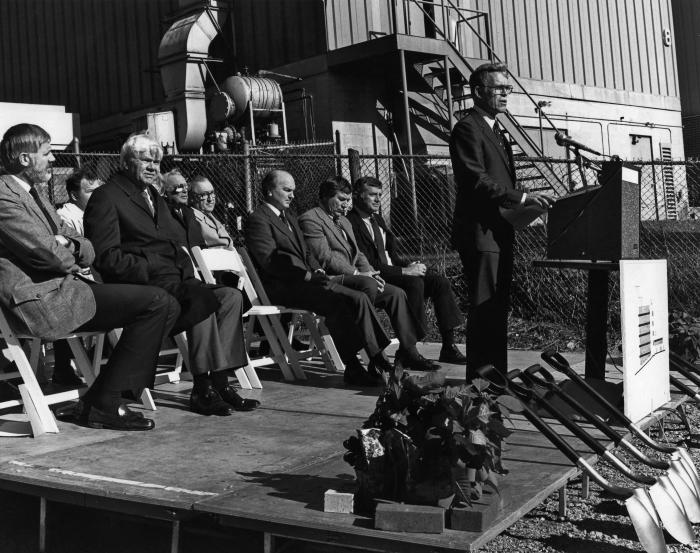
This photograph, taken in 1985, showed Centers for Disease Control executives participating in the ground breaking ceremony of the organization's newest virology laboratory located on the CDC's Clifton Road, Roybal Campus in Atlanta, Georgia.